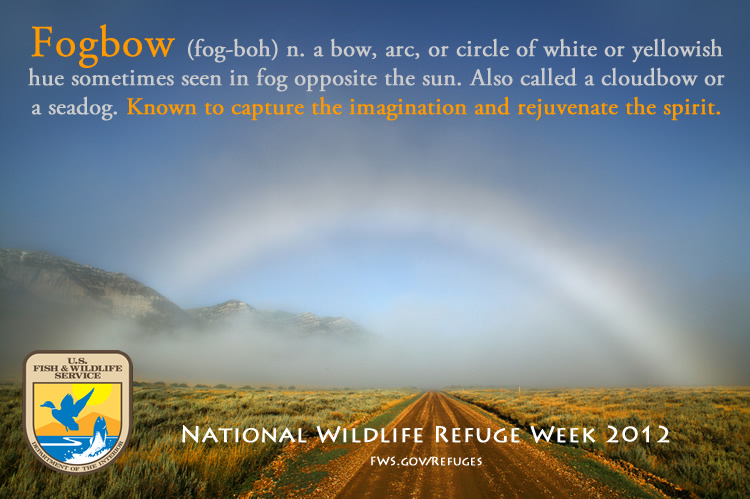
Fogbow